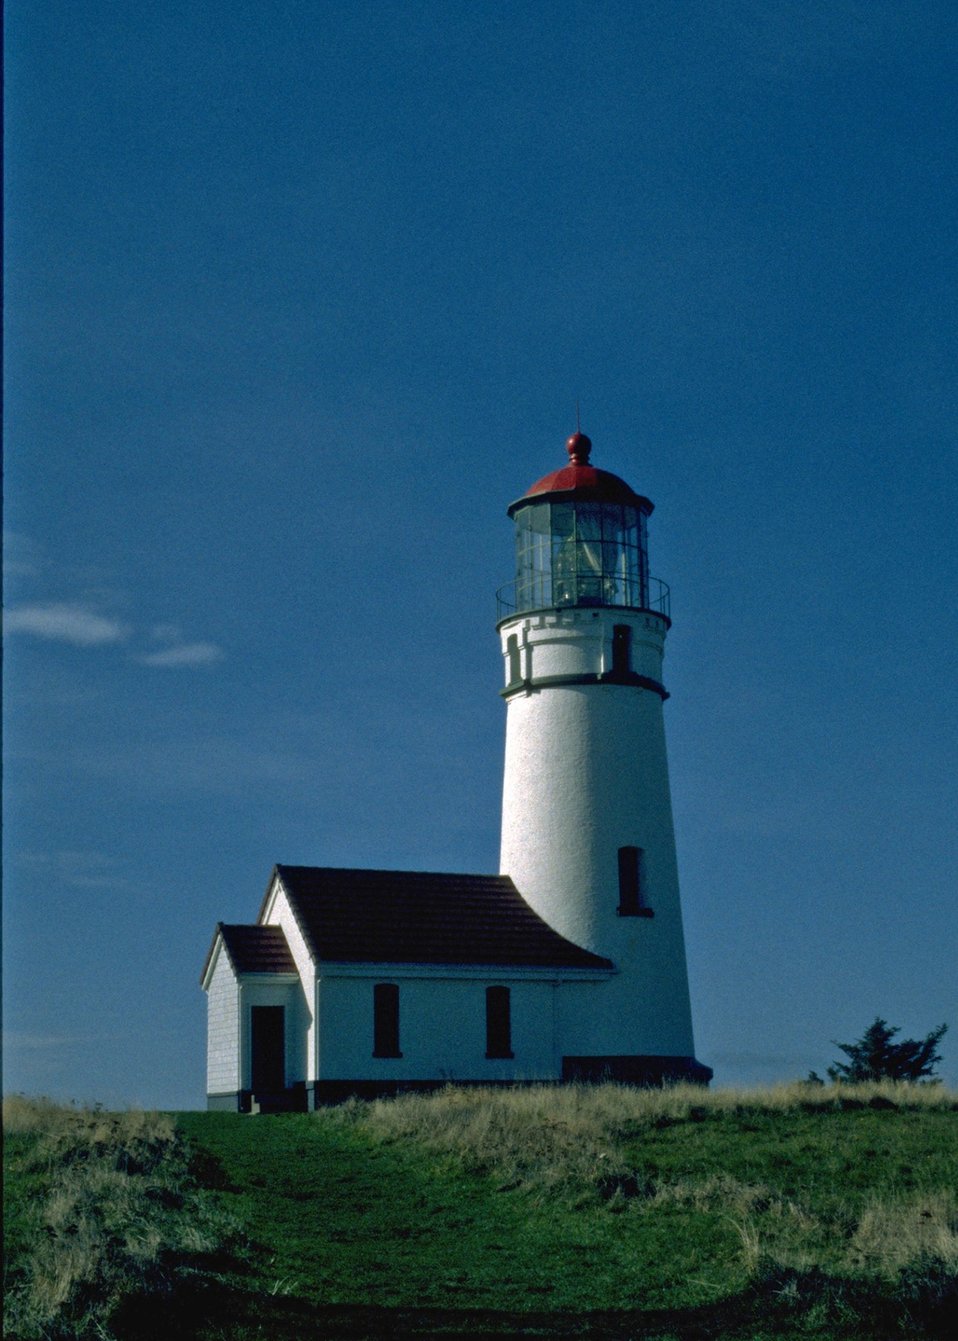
Cape Blanco Lighthouse.